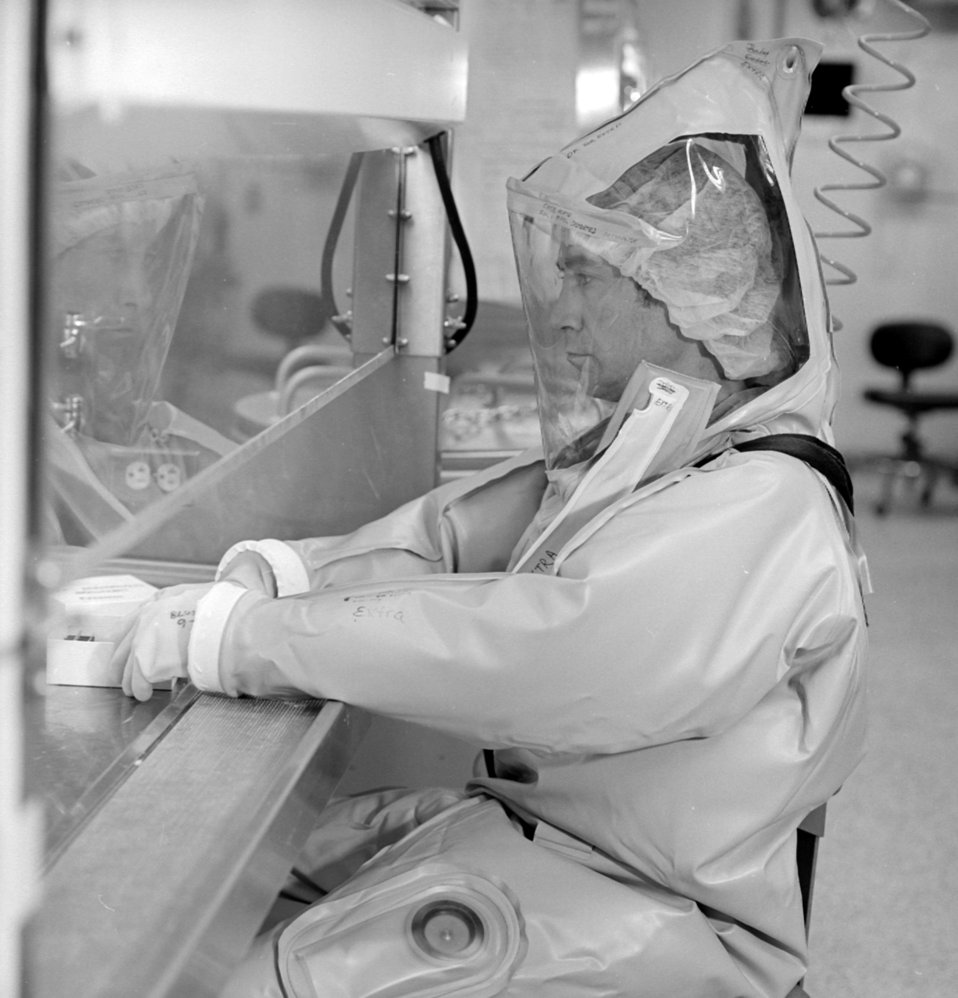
A CDC scientist conducts laboratory research in the Biosafety Level 4 laboratory.